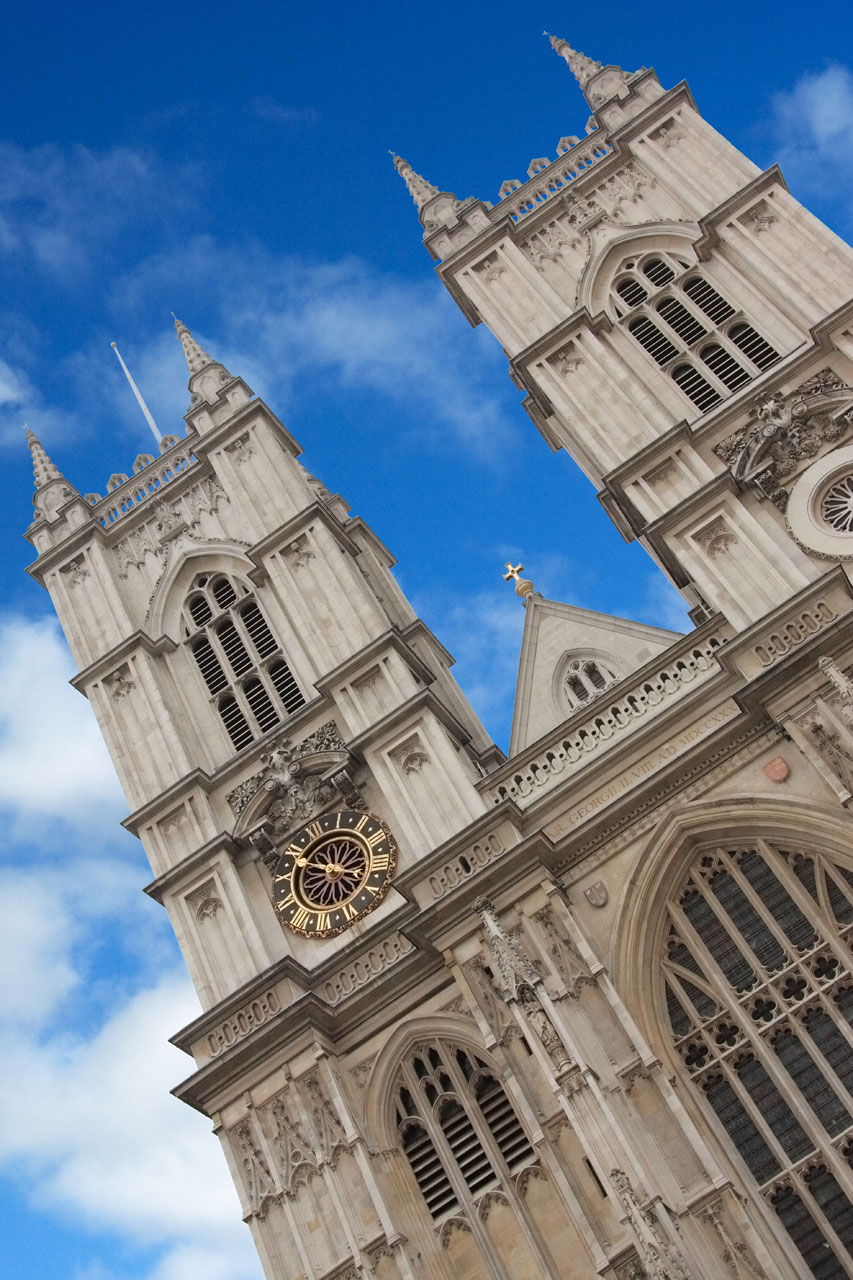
Westminster abbey in london.